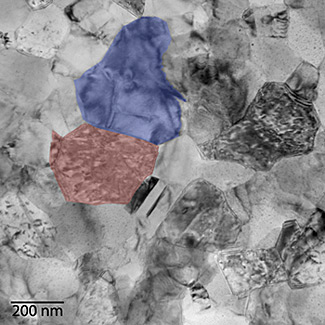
TEM; cobalt iron alloy

TEM (transmission electron microscope) image taken at NIST of an annealed cobalt iron alloy. The high magnetostriction seen in this alloy is due to the two-phase iron-rich (shaded blue) and cobalt-rich (shaded red) structure and the nanoscale segregation.